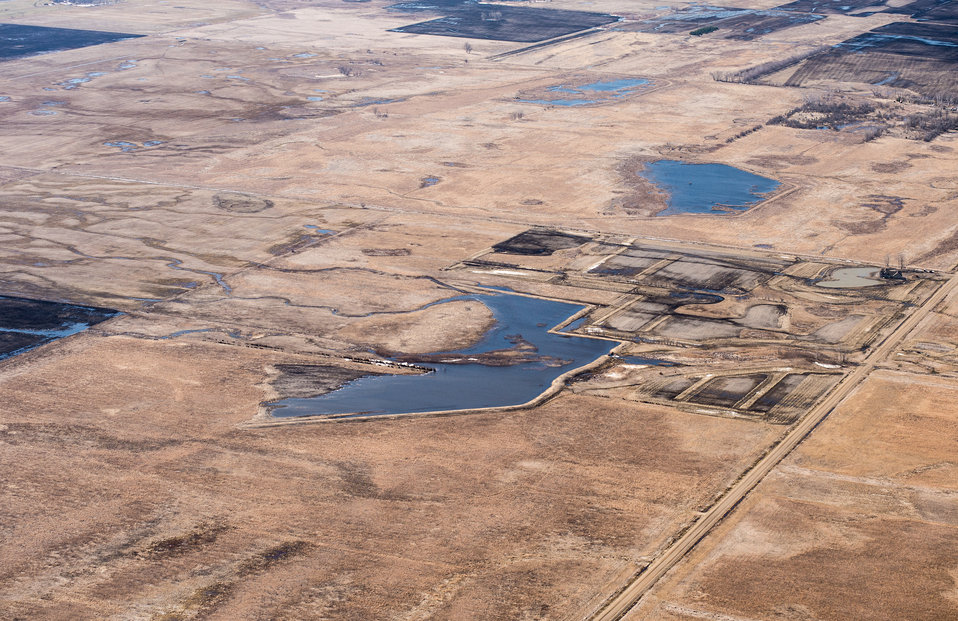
Ehlert North U.S. Department of Agriculture (USDA) Natural Resources Conservation Service (NRCS) Wetland Reserve Program (WRP) in Wilkin County, MN, on Tuesday, April 30, 2013. For information about this and other programs from the USDA Red River Basin Initiative (RRBI) please see www.mn.nrcs.usda.gov/news/features13/RRBI.html.